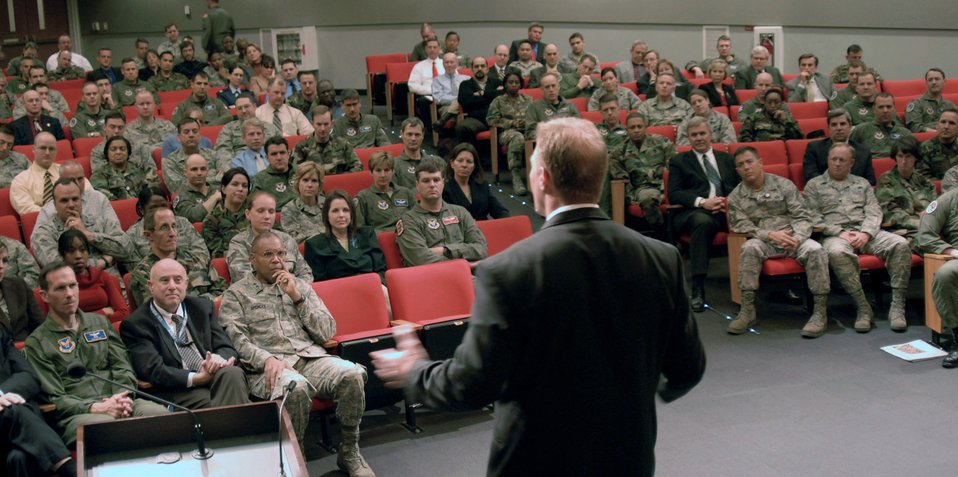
Former A-10 pilot, Cowboy speaks at Pentagon

Chad Hennings, a former A-10 pilot and Dallas Cowboy speaks to Airmen at the Pentagon March 27. Mr. Hennings is a motivational speaker and discussed the challenges of balancing career and family as well as his life experiences in the Air Force and the NFL.